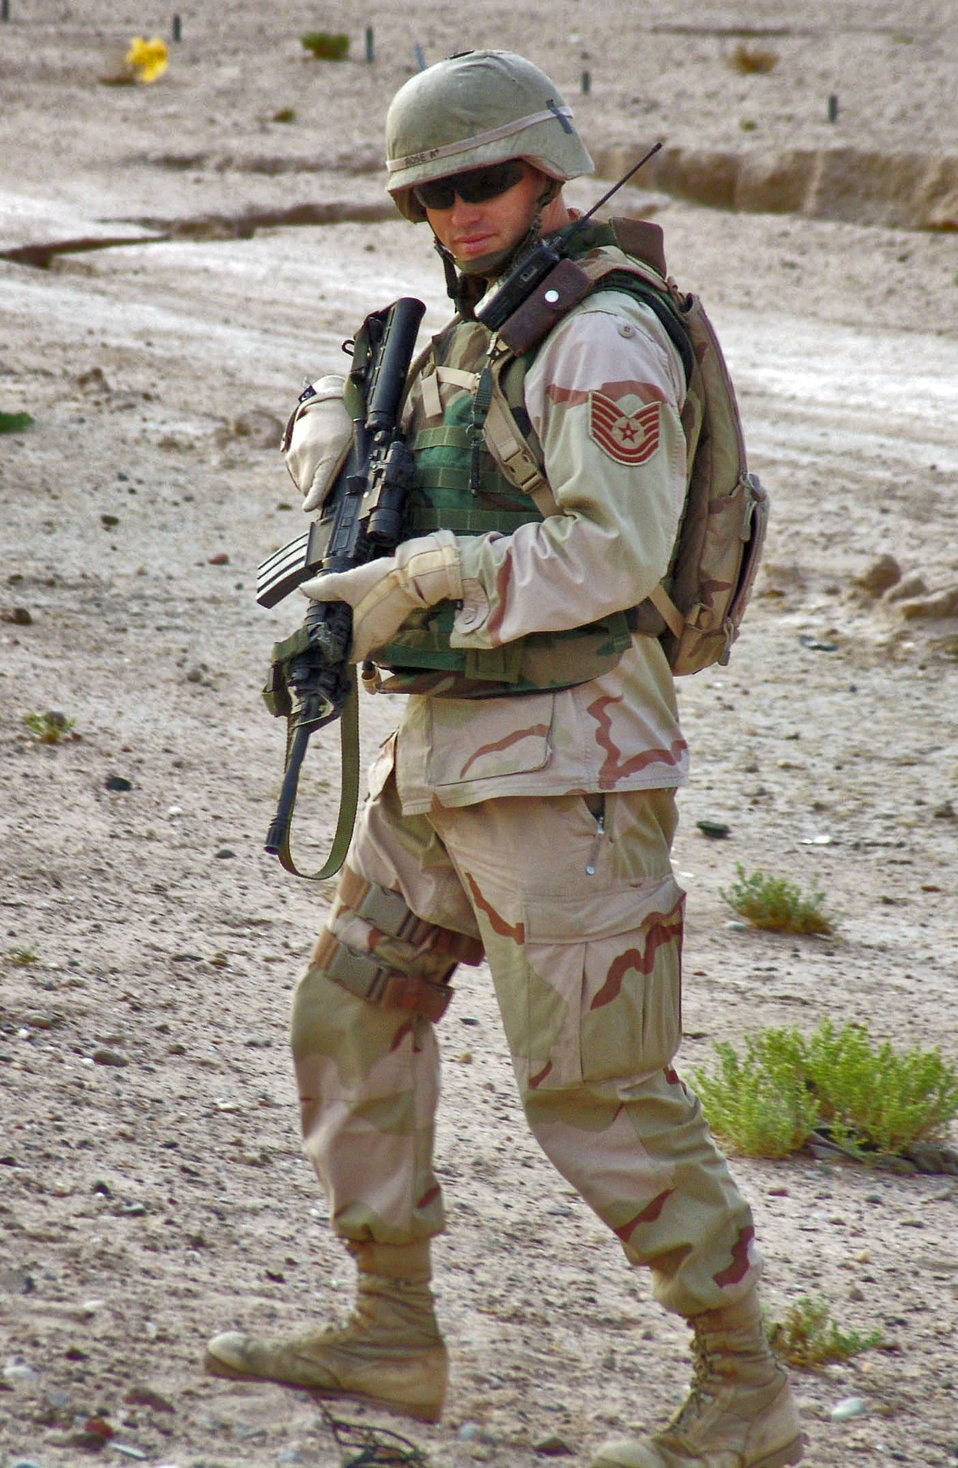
Roadside check

CAMP BUCCA, Iraq -- Tech Sgt. Robert Rose, a 586th Expeditionary Security Forces Squadron security forces member, checks a roadside culvert for improvised explosive devices. The 586th ESFS provides base and area security and convoy escorts here.